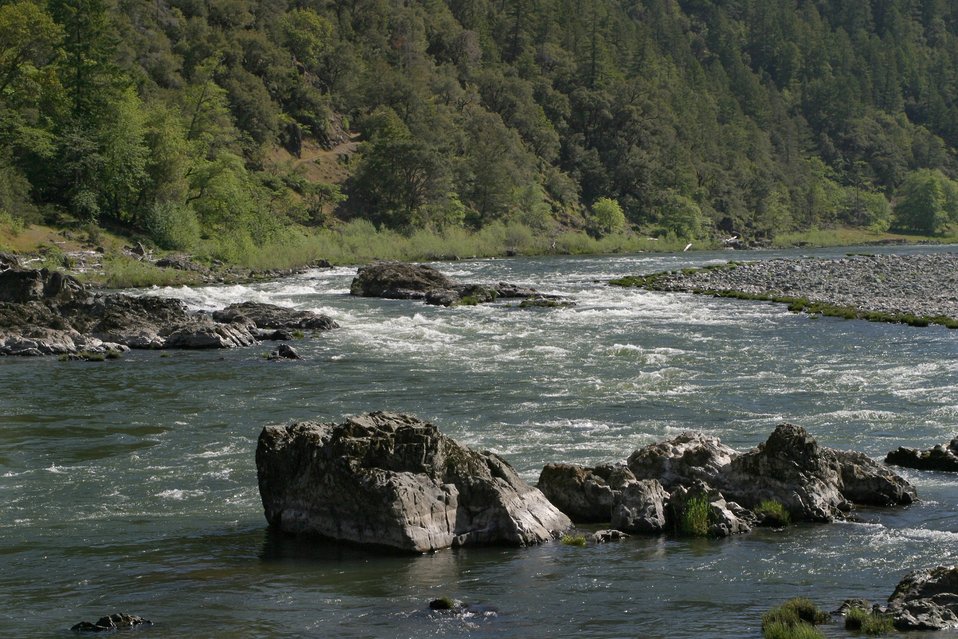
Tyee Rapid on the Wild section of the Rogue River from Grave Creek to Foster Bar May 19 to May 22.